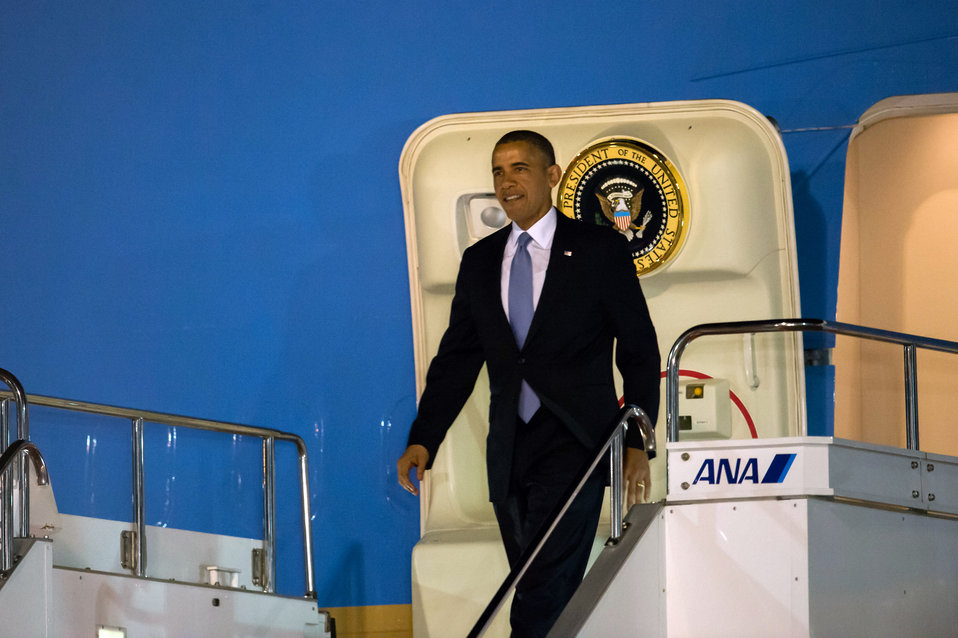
President Obama Arrives in Japan

U.S. President Barack Obama arrives at Tokyo International Airport in Japan on April 23, 2014.